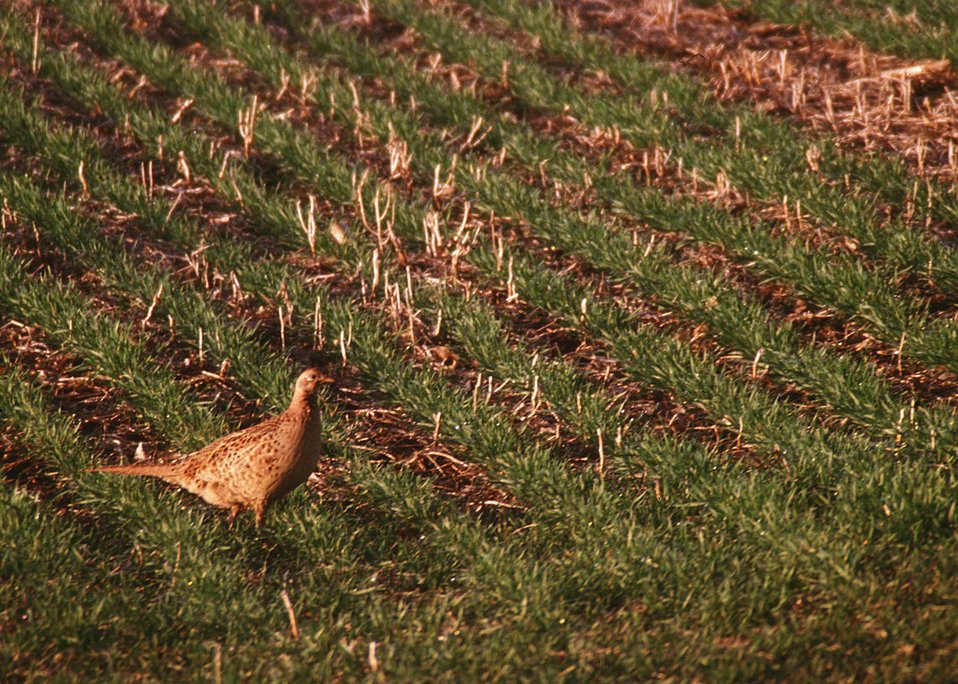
Hen pheasant in a South Dakota wheat field.